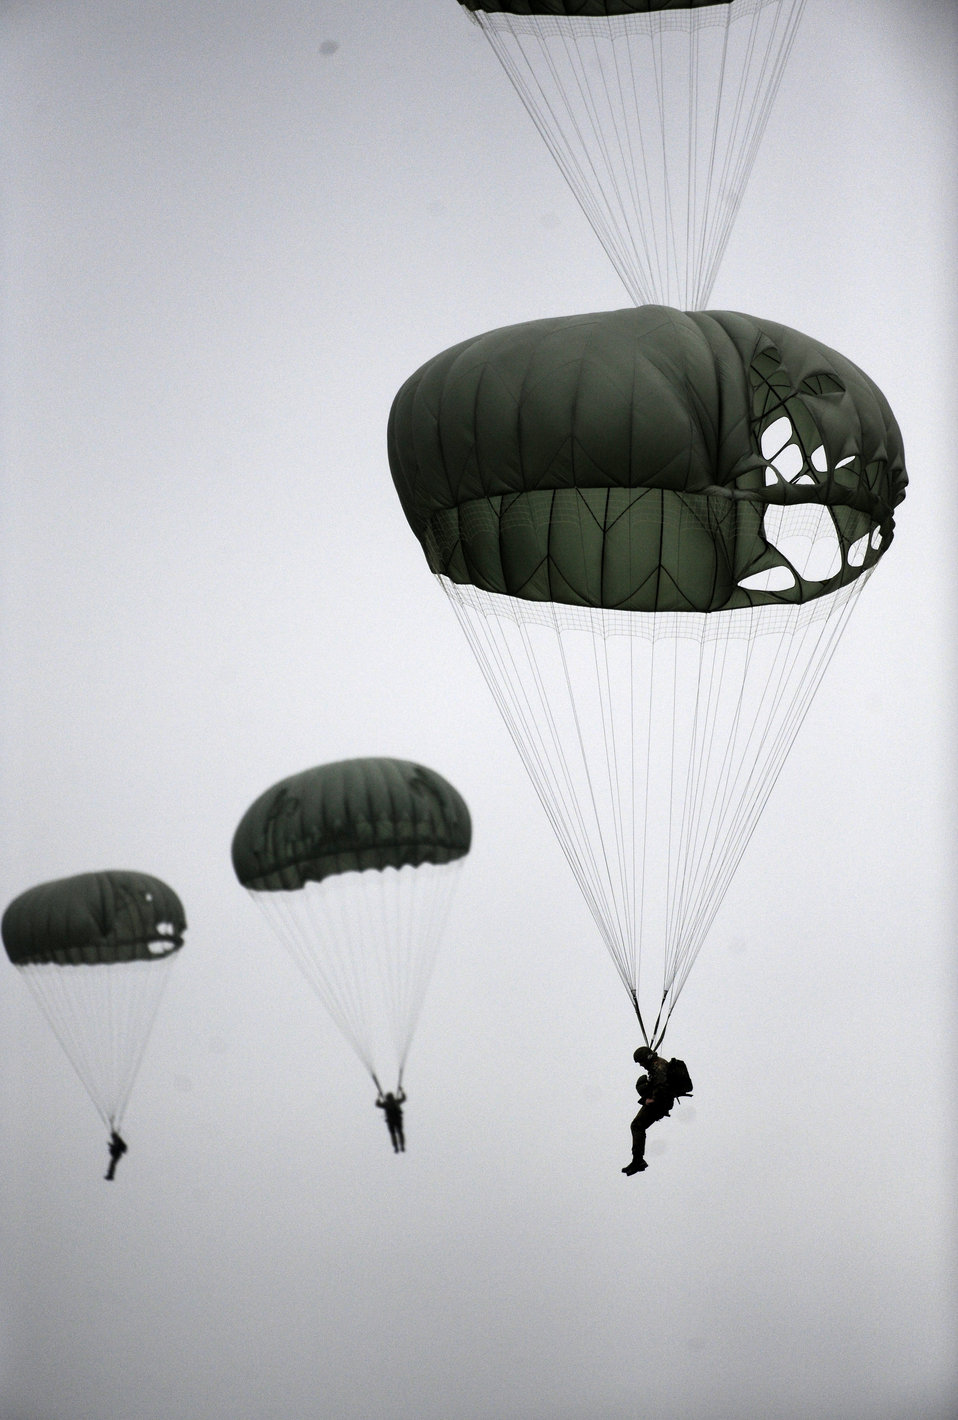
NATO Jump Week 2010

Servicemembers parachute from a C-17 Globemaster III June 17, 2010, over drop zone at Alzey, Germany, during International Jump Week 2010. Five NATO countries participated in the annual event to support one of United States Air Forces in Europe's top priorities building partnership.